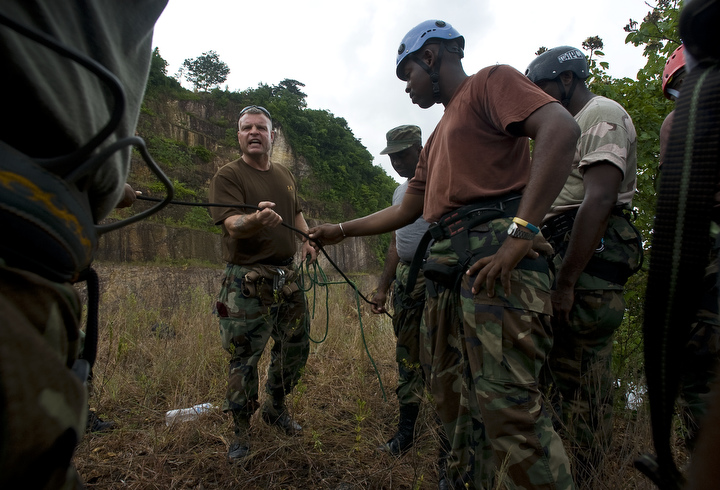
St. Lucia police team with Airmen during Operation Southern Partner

Pararescueman Senior Master Sgt. Michael Fleming (center) conducts safety checks on rappelling harnesses to members of the Royal St. Lucia police force's special service unit June 1 during a subject matter expert exchange on mountaineering and high angle recovery rescue procedures for Operation Southern Partner in La Toc, St. Lucia.